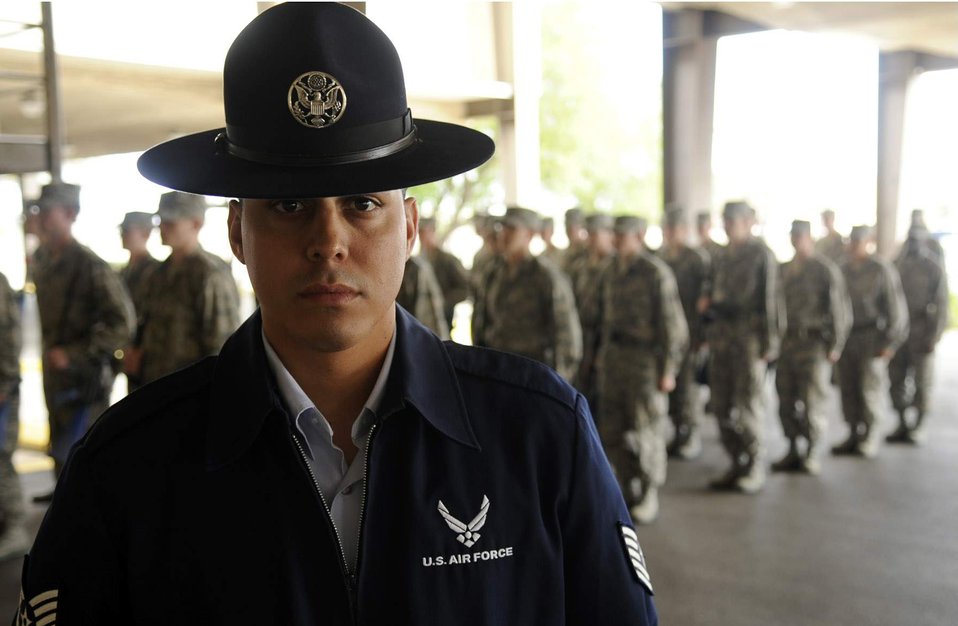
Basic training

Tech. Sgt. Ricardo A. Chavez is a military training instructor at Lackland Air Force Base, Texas. He is the face of the Air Force for hundreds of trainees throughout the year and molds recruits through a recently overhauled and expanded Air Force Basic Military Training that focuses on a ?warrior first? philosophy.